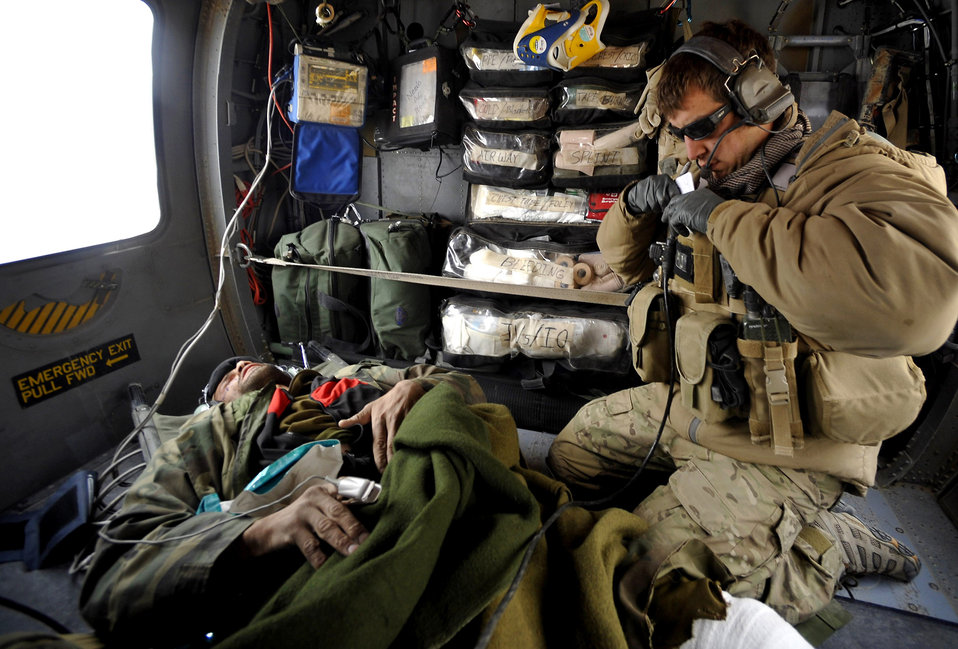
Squadron highlights capabilities during Afghan rescue mission

A pararescueman provides medical attention to an Afghan who has suffered gunshot injuries, Dec. 8, 2009. Pararescuemen are able to rescue patients in any situation who need medical attention. The pararescueman is from the 66th Expeditionary Rescue Squadron deployed to Camp Bastion, Afghanistan.